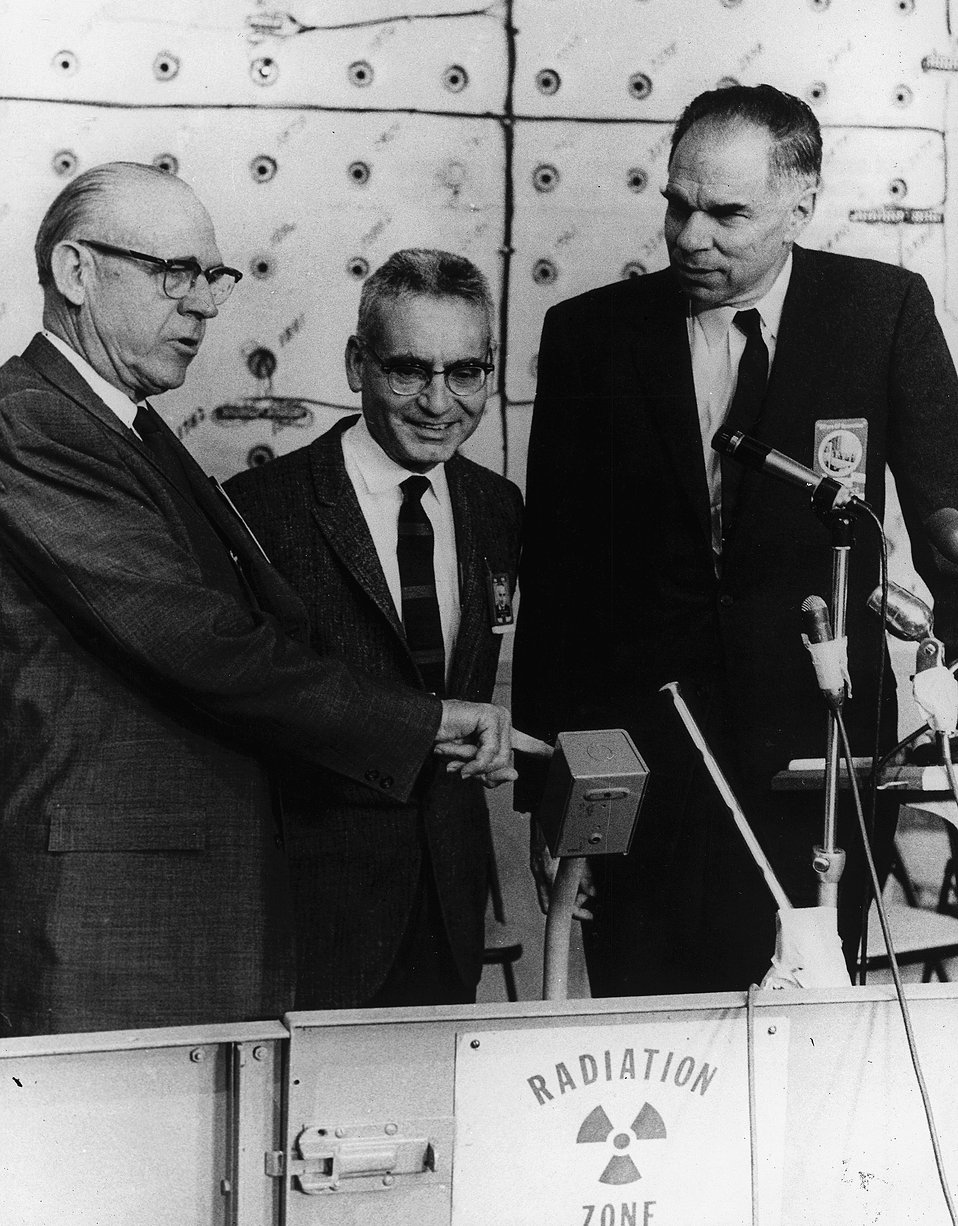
The Graphite Reactor at the AEC's Oak Ridge National Laboratory, Tennessee, was shut down for retirement on November 4, 1963, after 20 years of operation. c. 1963